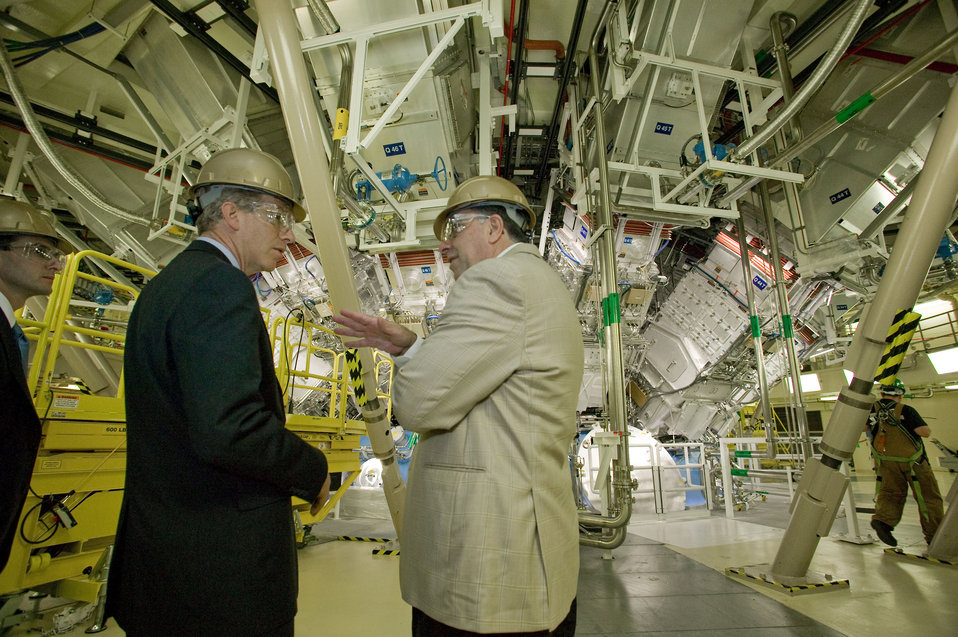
Deputy Secretary of Energy Daniel Poneman

Left to right, Adam Cohen, Tomas De La Rubia, Alice Williams, Daniel
Poneman, George Miller, Phil Hill, Bruce Goodwin